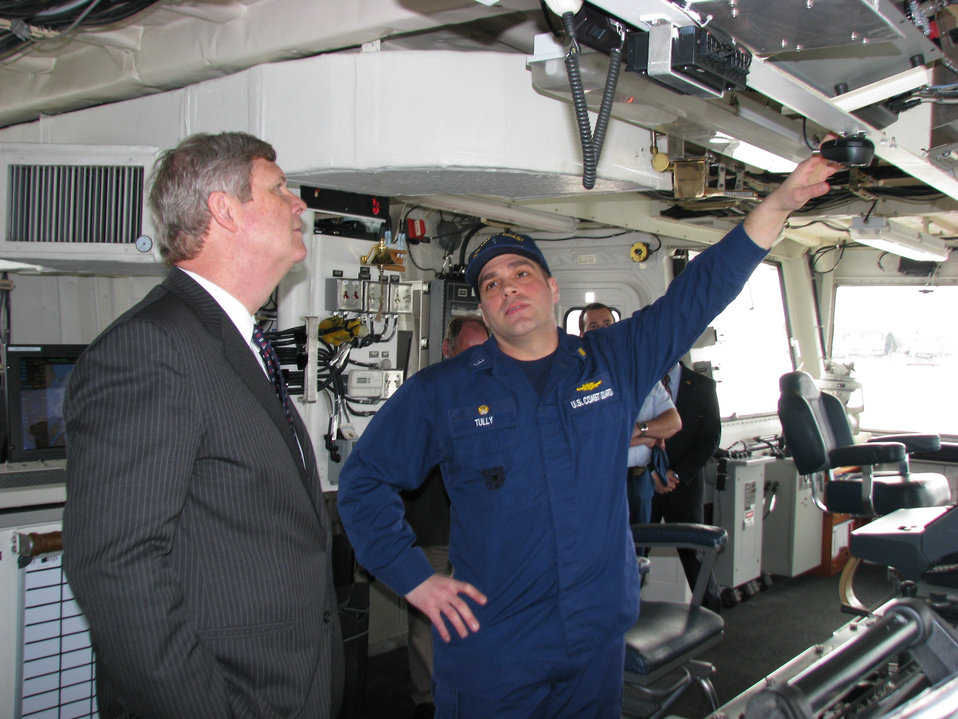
Agriculture Secretary Tom Vilsack tours the buoytender USCG Marcus Hanna at the U.S. Coast Guard Station in South Portland, ME on Thursday, Mar. 14, 2013. Secretary Vilsack highlighted the importance of nutrition to America’s military readiness. Today, only a quarter of Americans aged 17 to 24 are eligible to serve in the armed forces – in part because many are overweight or obese.